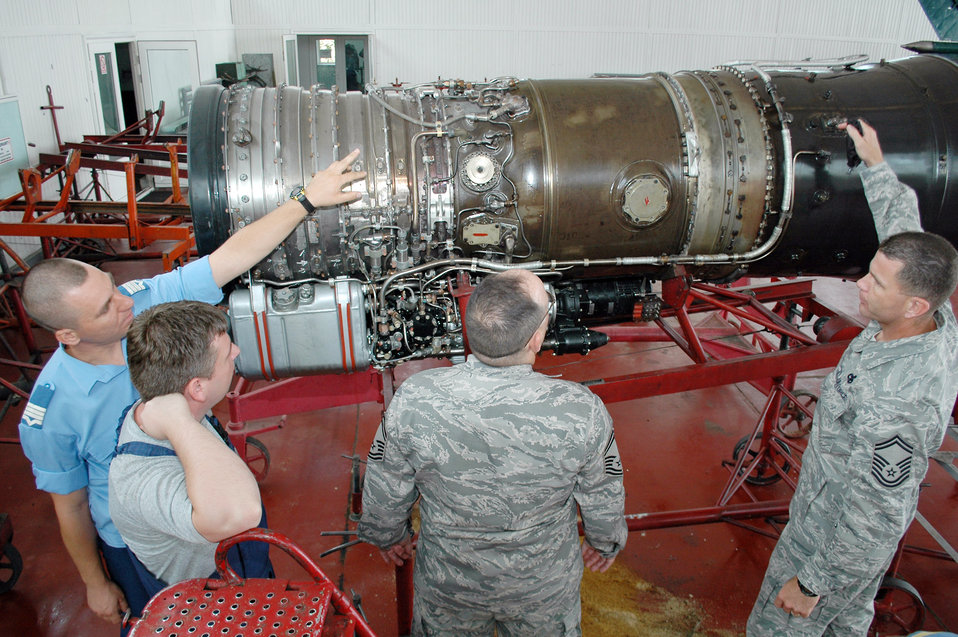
U.S., Romanian Air Forces discuss aircraft maintenance

Romanian air force Warrant Officer Second Class Dima Valentin, (far left) discusses the inner workings of the MiG-21 Lancer fighter engine with two senior NCOs from the 31st Maintenance Group Aug. 26, 2009 at the 86th Air Base in Fetesti, Romania. The two NCOs were part of a three-person U.S. Air Forces in Europe maintenance NCO training program traveling contact team who met with Romanian air force aircraft maintainers and warrant officer and NCO school instructors Aug. 25 through 28.